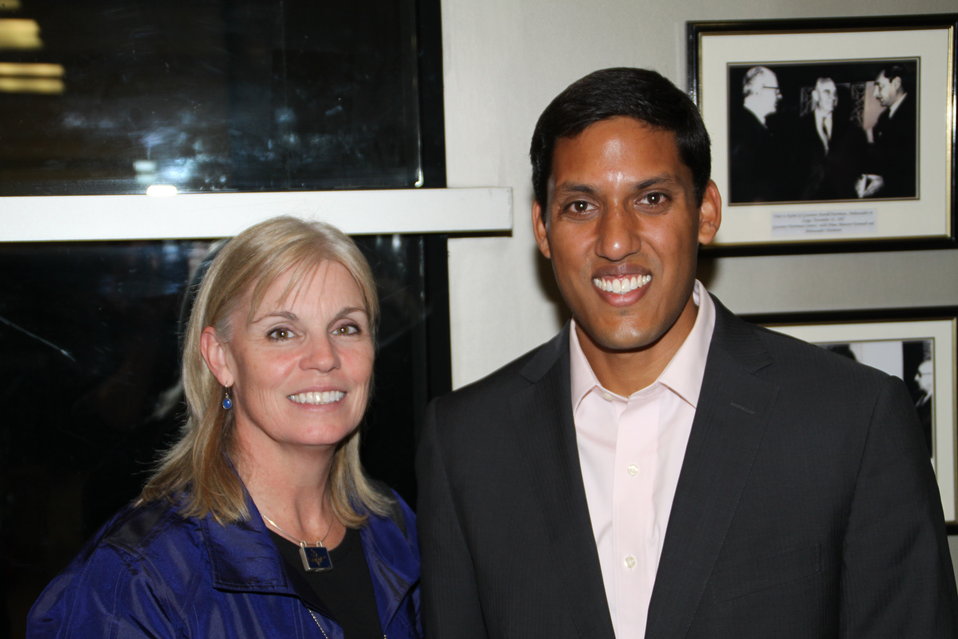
US Embassy Town Hall July 21, 2010